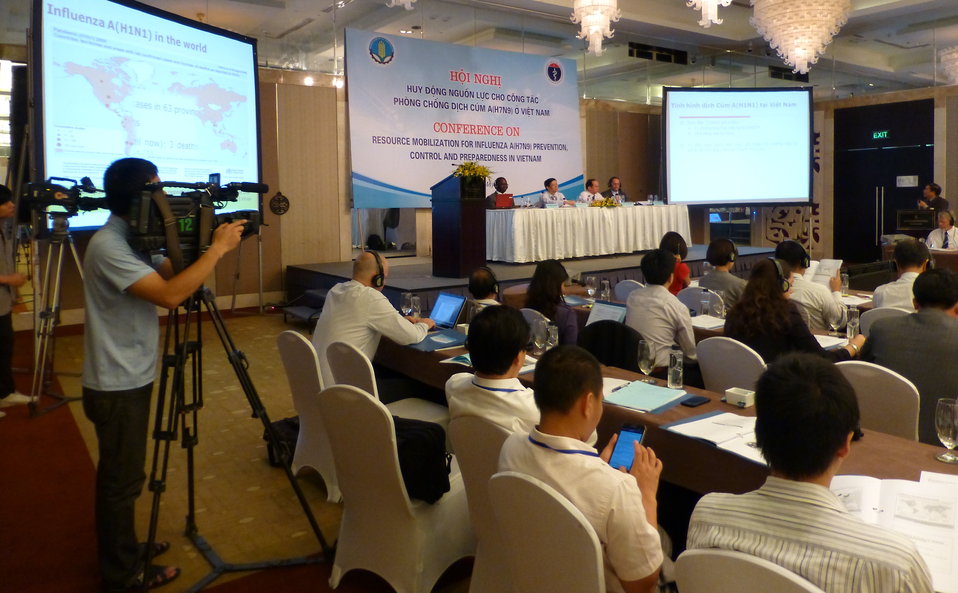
Conference on Resource Mobilization for Influenza A (H7N9) Prevention, Control and Preparedness in Vietnam

Hanoi, May 6, 2013
Supported by USAID Vietnam